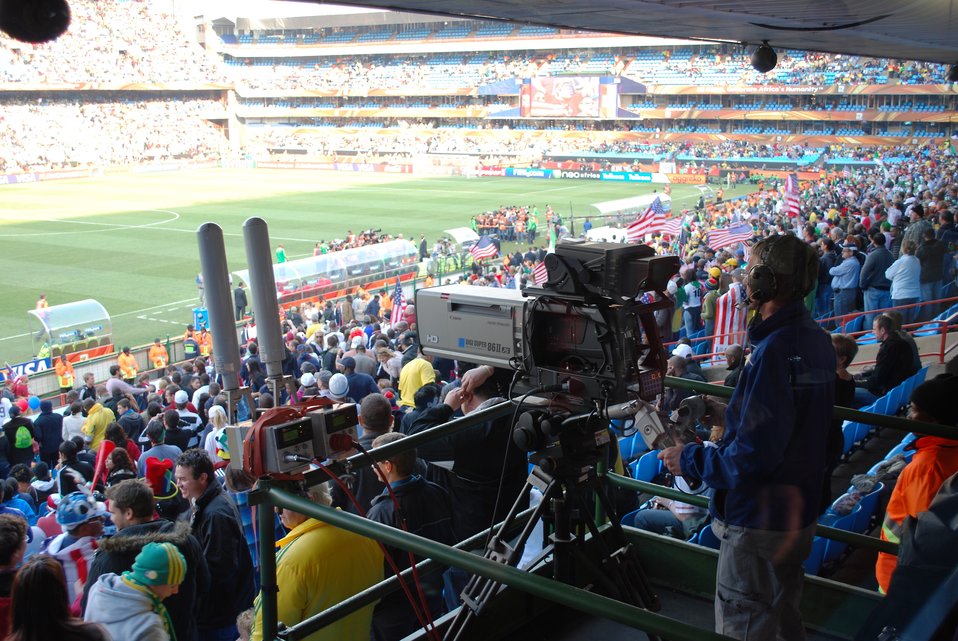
The U.S. Men’s National Soccer Team Plays Algeria

A photo is taken during the U.S. vs. Algeria World Cup soccer match at Loftus Versfeld Stadium in Pretoria, South Africa, on June 23, 2010.